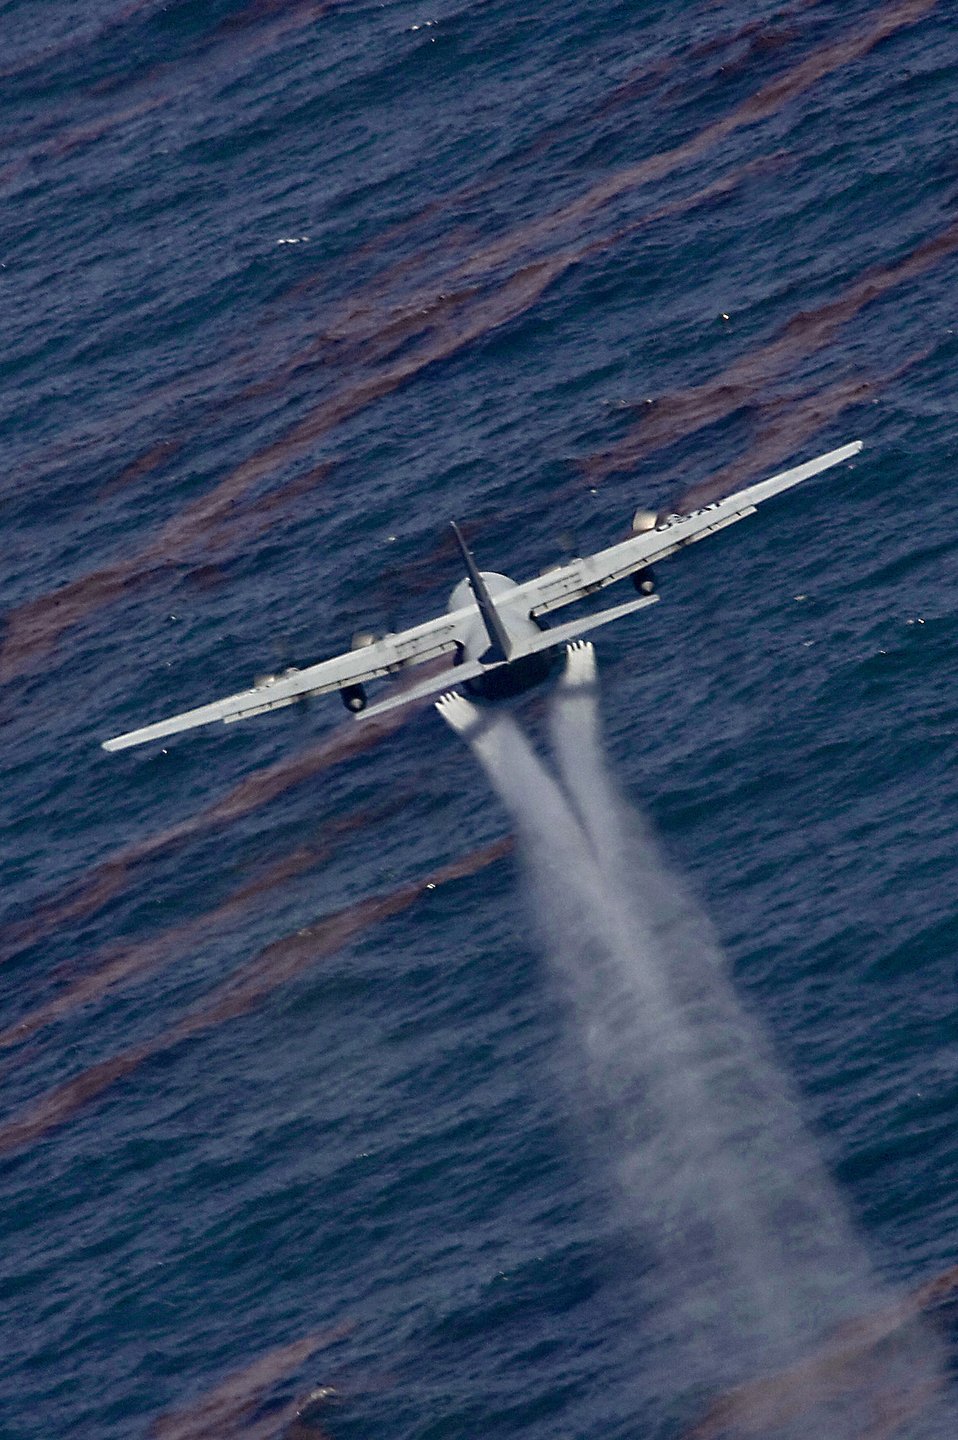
C-130 aircrew helps fight oil spill

A C-130 Hercules drops an oil-dispersing chemical over the Gulf of Mexico as part of the Deepwater Horizon Response effort May 5, 2010. Members are from the Air Force Reserve Command's 910th Airlift Wing at Youngstown-Warren Air Reserve Station, Ohio. The unit specializes in aerial spray and is the Department of Defense's only large-area, fixed-wing aerial spray unit.